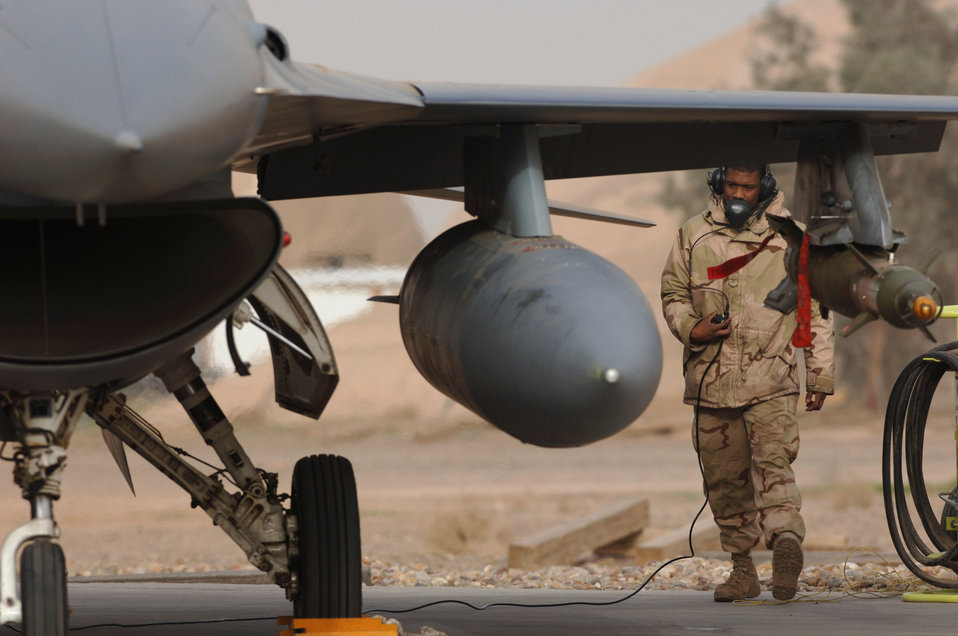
'Standing by to launch'

Senior Airman Robert Gattison communicates with the pilot of this F-16 Fighting Falcon Jan. 29 during a pre-flight check at Balad Air Base, Iraq, before the aircraft takes off on a combat mission. Airman Gattison is a crew chief with the 14th Expeditionary Aircraft Maintenance Squadron.